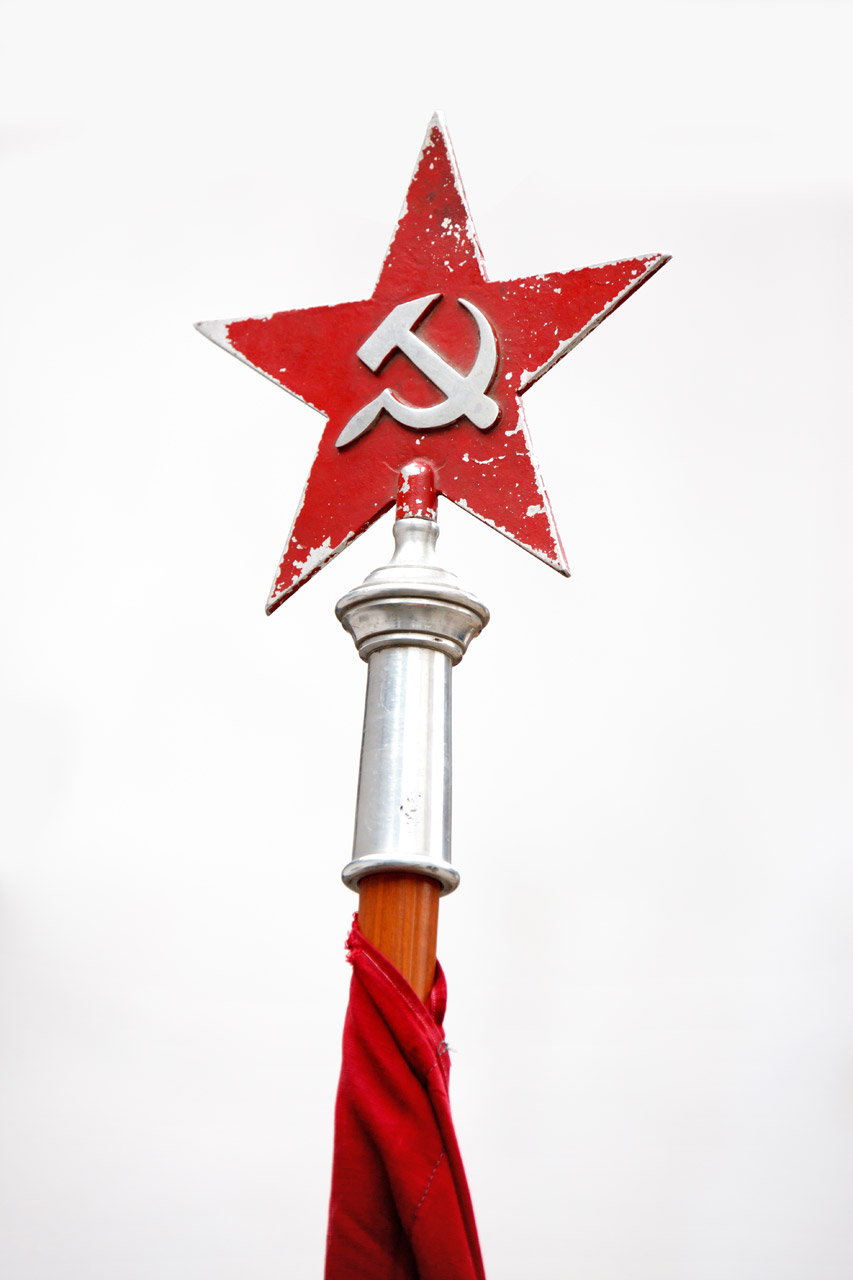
Soviet army star

Red soviet army star on a pole isolated on white background.